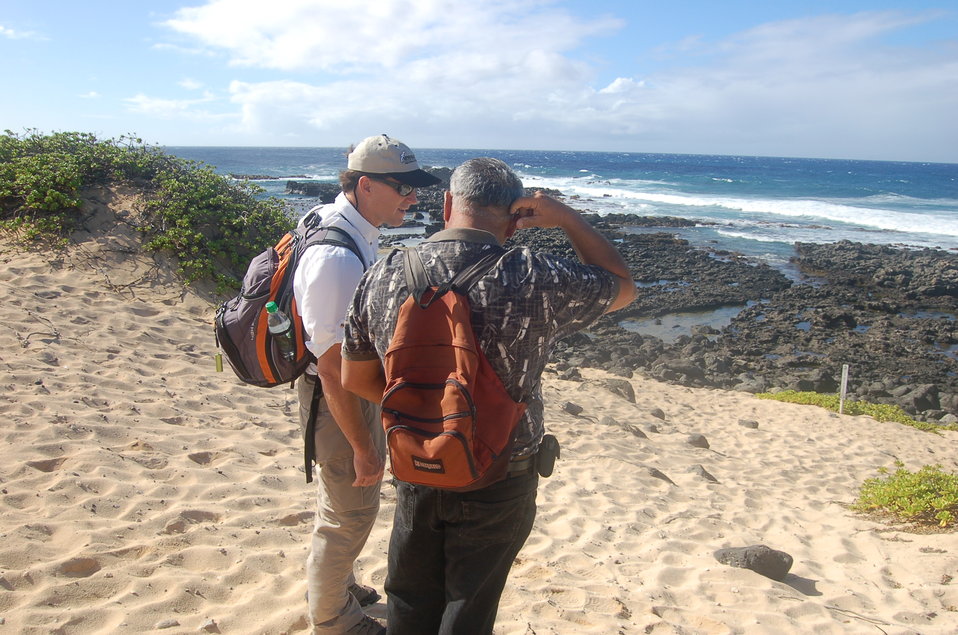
Dan Ashe tours Ka'ena Point State Park in Hawaii

Dan Ashe tours Ka'ena Point State Park with Hawaii's State Director of the Department of Land and Natural Resources.